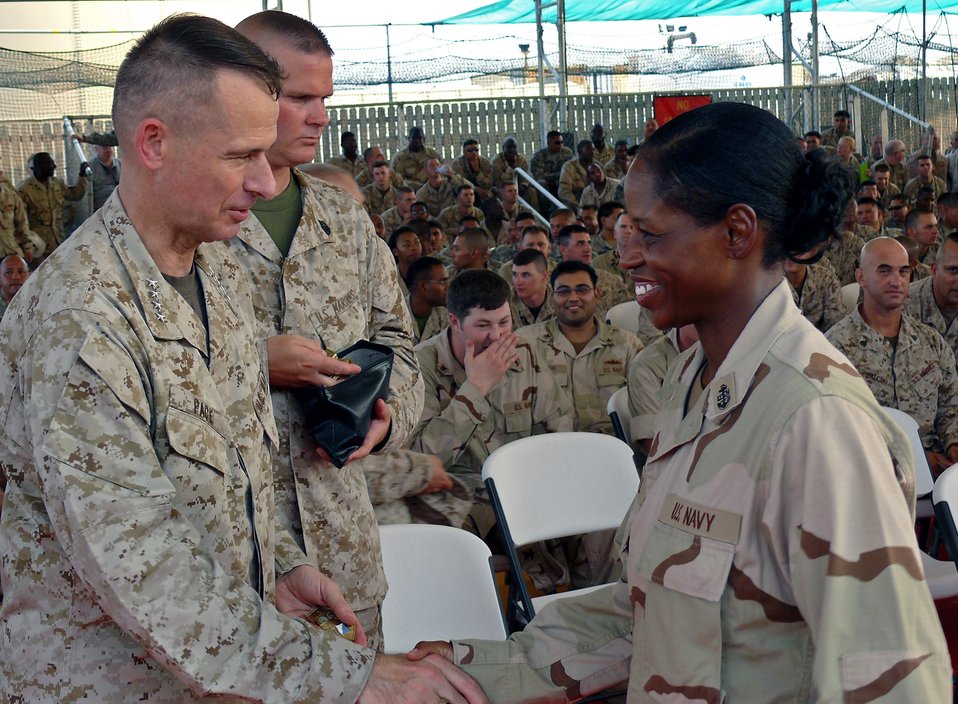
Gen. Pace visits servicemembers in Djibouti

Chairman of the Joint Chiefs of Staff Marine Gen. Peter Pace hands out challenge coins to every servicemember present at a Town Hall Meeting Aug. 14 at Camp Lemonier, Djibouti. The general answered questions, shook hands and talked with servicemembers during his visit to Camp Lemonier. Through a humanitarian mission of capacity building and military training to help Africans help themselves, Combined Joint Task Force - Horn of Africa members conduct operations such as well-drilling, school construction, medical and veterinary civic action programs and military-to-military training.